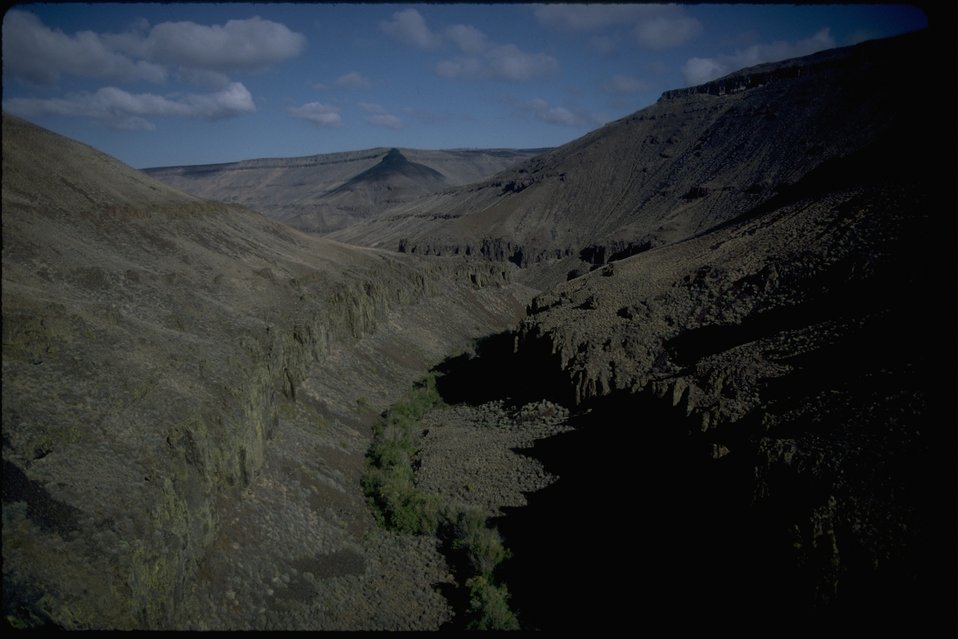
Aerial of the riparian area of Fifteen Mile Creek in the canyon with brush and willows surrounding. OR 3-156